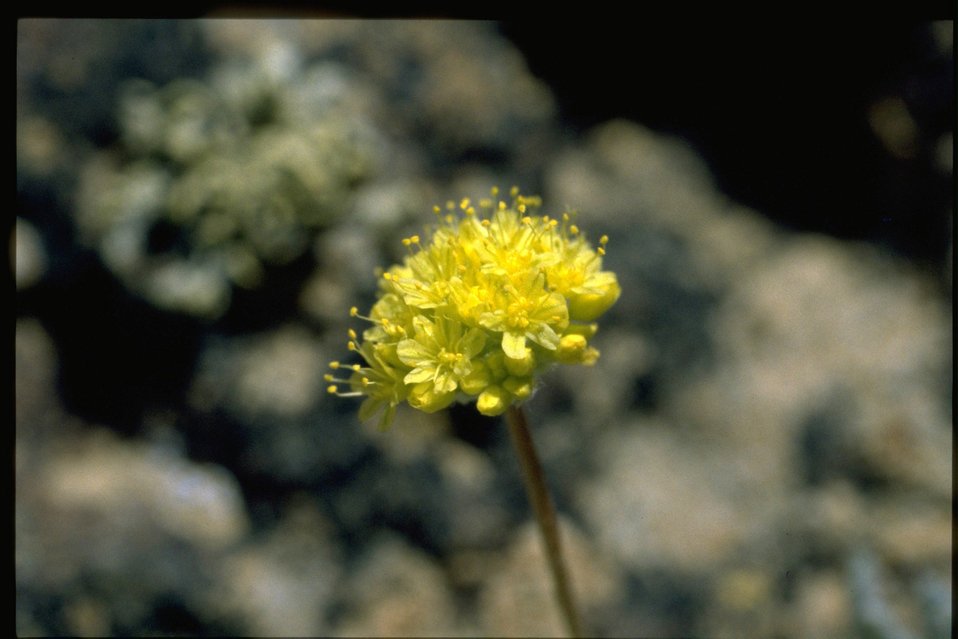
Close up shot of buckwheat wildflower.